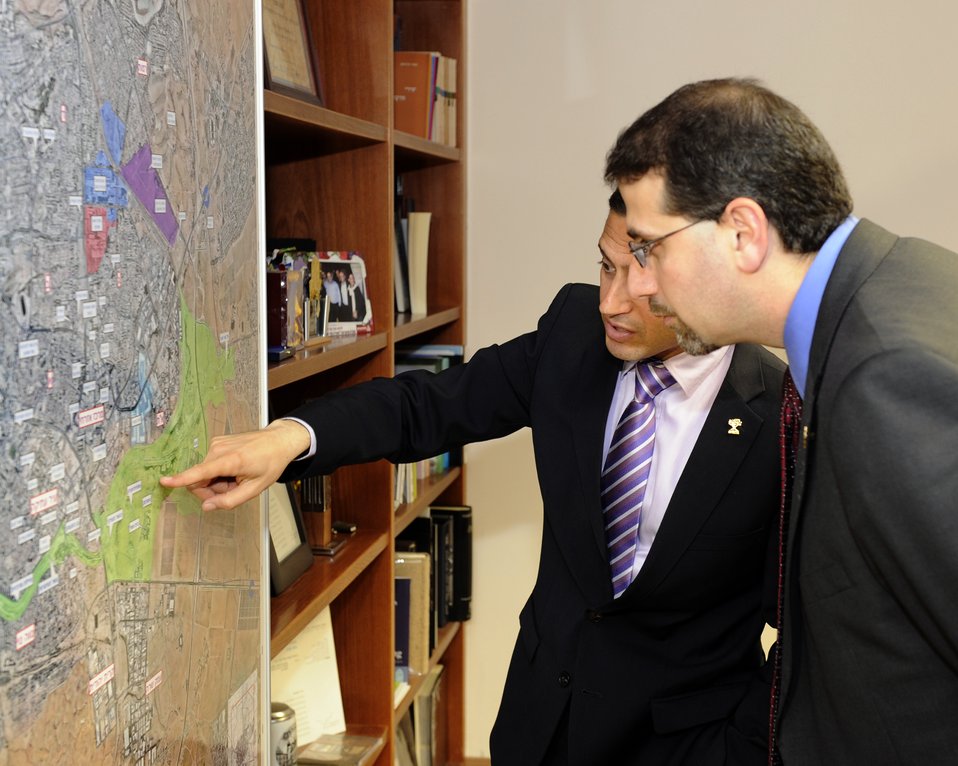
Ambassador Shapiro Visits BeerSheva

U.S. Ambassador Israel Daniel Shapiro visits BeerSheva, Israel, on March 19, 2012.